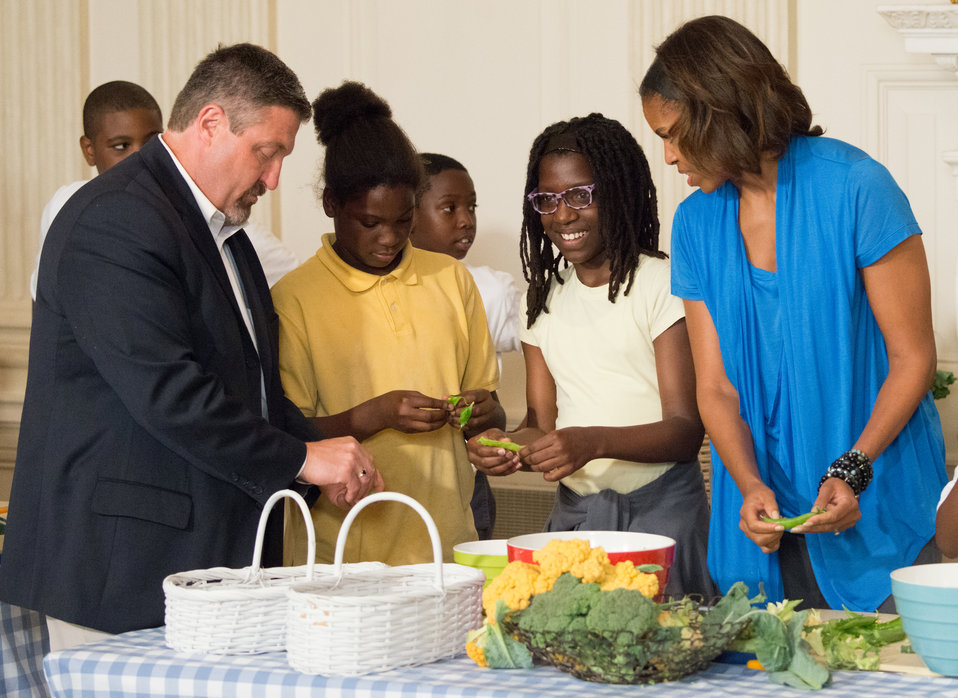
West Virginia Department of Education Office of Child Nutrition Executive Director Richard Goff and First Lady Michelle Obama and join Washington, D.C. students from Cleveland Elementary School, Friendship Public Charter School, Kimball Elementary School, Bancroft Elementary School, Harriet Tubman Elementary School, who helped plant the garden in the spring, make lunch from this year’s summer crop with the help of White House chefs and visiting school nutrition directors from Orlando, FL, Dallas, TX, and West Virginia in the State Dining Room of the White House in Washington, D.C. on Thursday, Jun. 12, 2014.